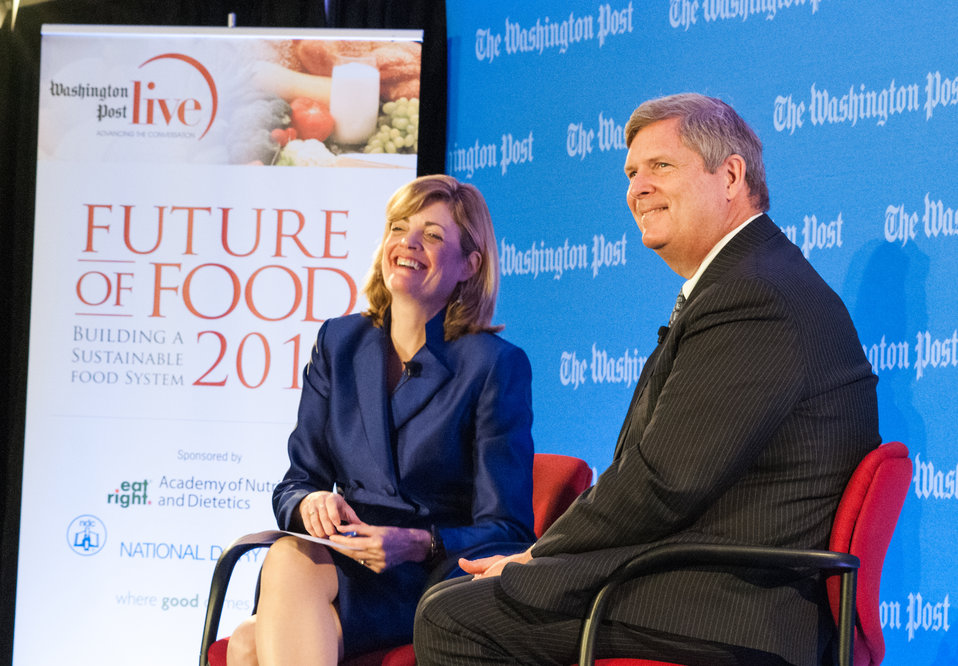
Washington Post Live Editor Mary Jordan and Agriculture Secretary Tom Vilsack react to a question posed during the annual live forum, “Future of Food: Building a Sustainable Food System 2013,” sponsored by the Washington Post in Washington, D.C. on Wednesday, May 22, 2013. Secretary Vilsack along with leading agricultural, government and nutrition experts discussed expanding healthy, sustainable food systems, public-private partnerships, the market’s role in nutrition and the future of agricultural innovation.